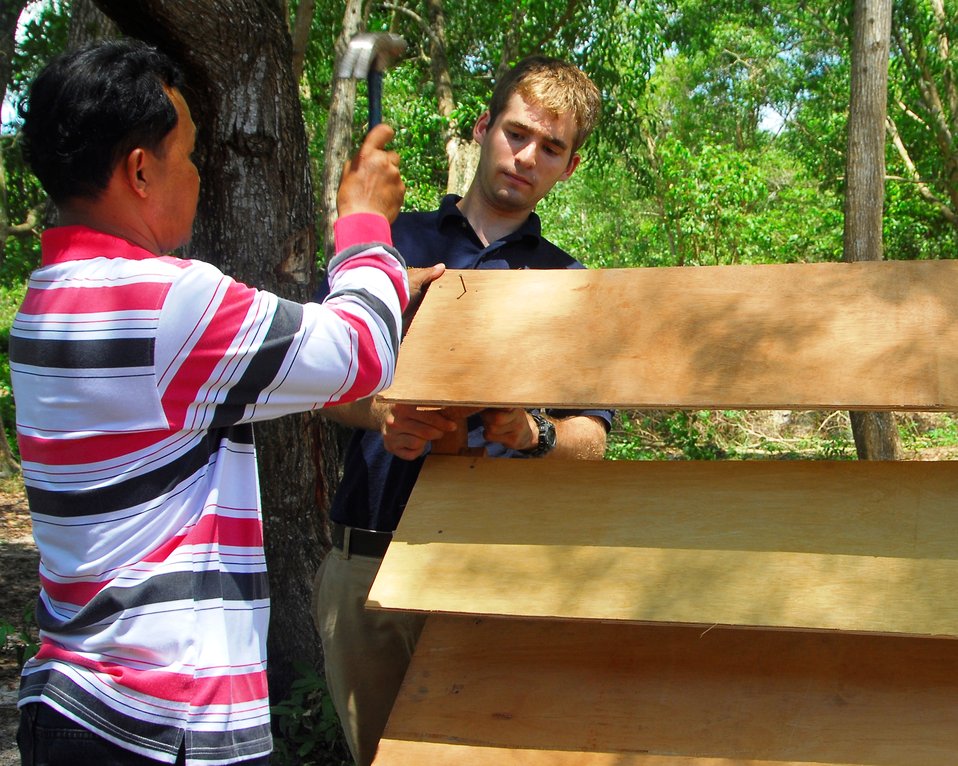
UVA Mech. Engineering Student Makes a Bookshelf

Shawn Masavage, a University of Virginia mechanical engineering student working with University of California, San Diego Pre-Dental Society and currently embarked with the Military Sealift Command hospital ship USNS Mercy (T-AH 19), makes a book shelf at the O. Tres Primary School during an engineering civic action program on June 23, 2010, in Sihanoukville, Cambodia.